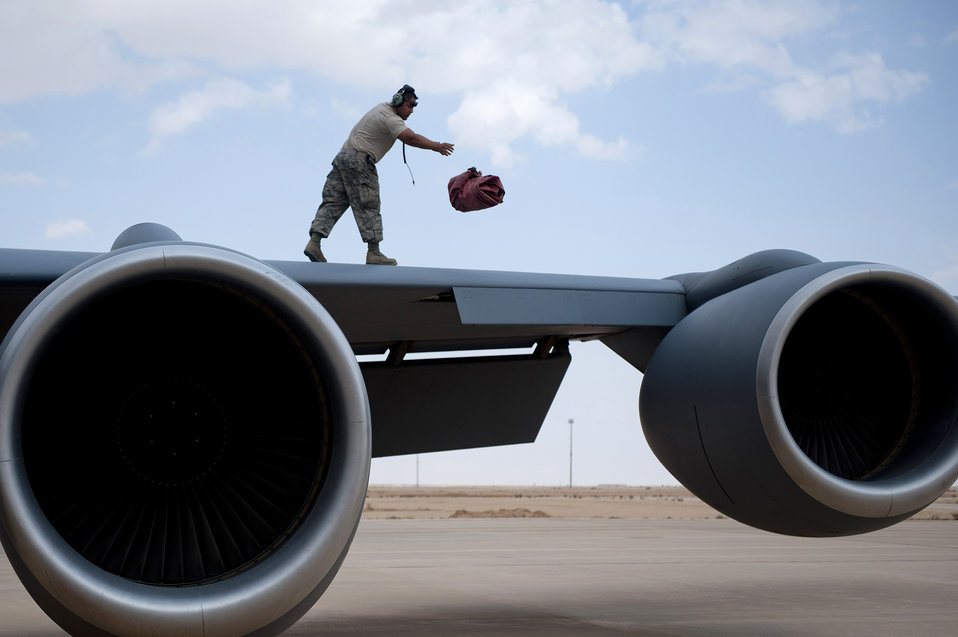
Working under cover

Staff Sgt. Adrian DeLaCruz prepares to put engine covers on a KC-135 Stratotanker May 1, 2011, in Southwest Asia, during post-flight procedures after a refueling mission in support of Operation New Dawn. Sergeant DeLaCruz is assigned to the 340th Expeditionary Aircraft Maintenance Squadron.